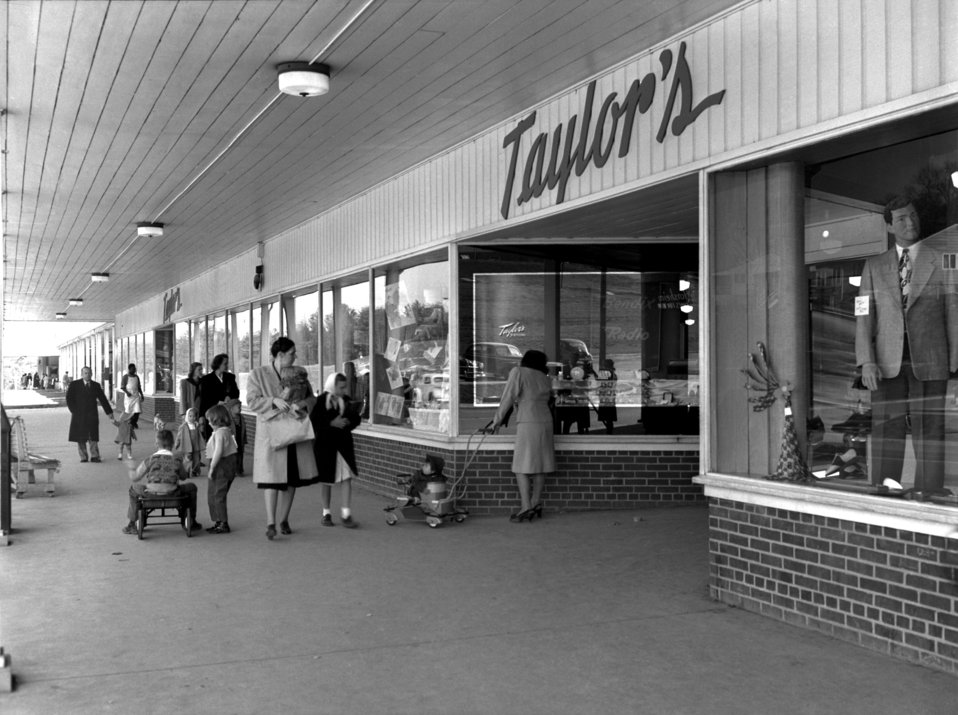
Jackson Square Shopping Center Townsite

4377b DOE photo by Ed Westcott
Oak Ridge Tennessee 3-8-1948